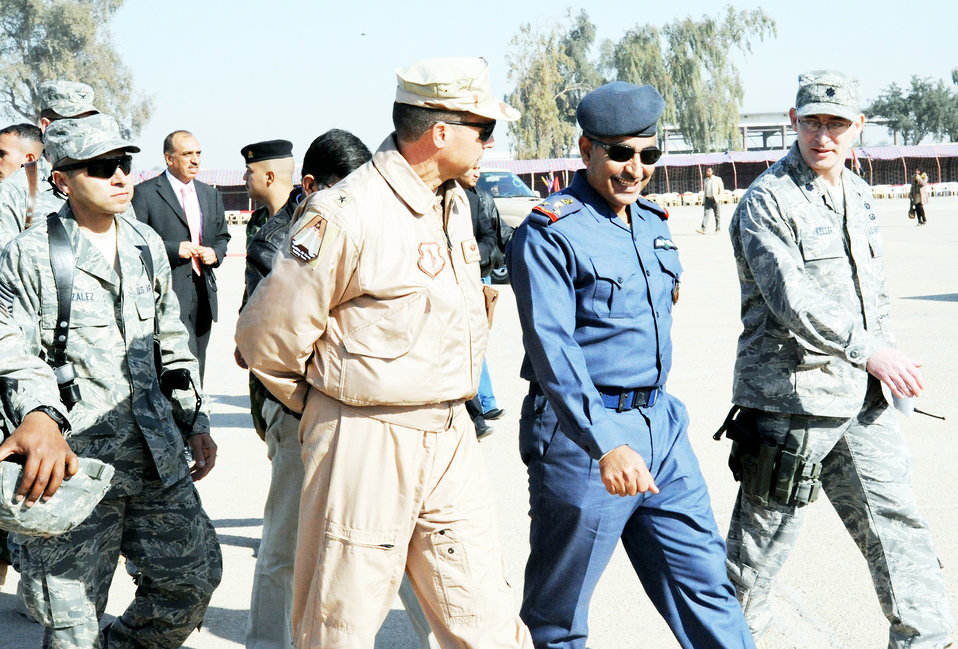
Iraqi air force graduates 247 cadets

Chief Master Sgt. Ruben Gonzalez (left), Brig. Gen. Scott M. Hanson, Brig. Gen. Pilot Ali and Lt. Col. David Keller, walk together after an Iraqi air force officer graduation ceremony Jan 10, 2010, at the Iraqi Military Academy-Rustamiyah, Iraq. Chief Gonzalez is the 321st Air Expeditionary Wing command chief. General Hanson is the Iraq Training and Advisory Mission - Air Force Director, Staff. General Ali is the Dean of the Iraqi air force academy. Colonel Keller is the chief air force officers program for the Iraq Training and Advisory Mission-Air Force.